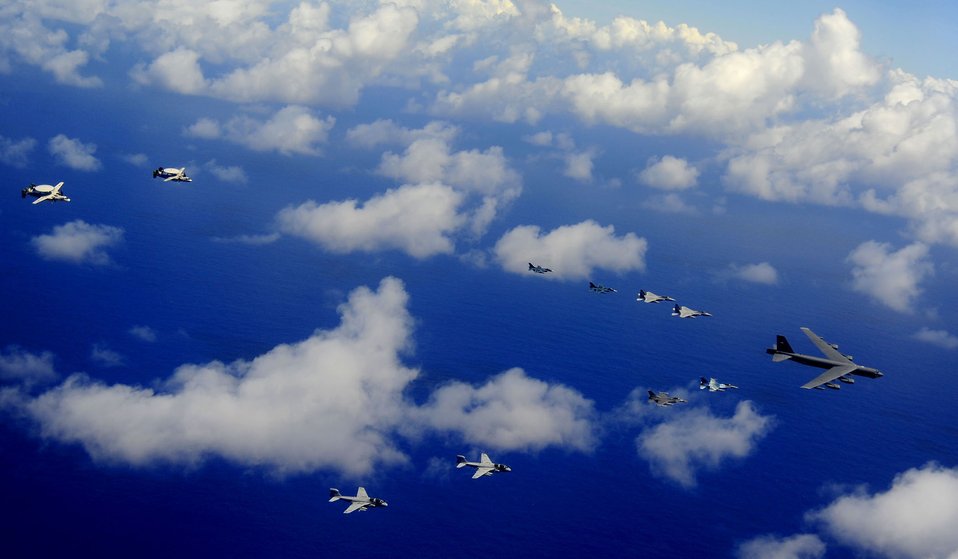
Taking to the sky

A formation of aircraft flies over Guam Feb. 21, 2011, during exercise Cope North.